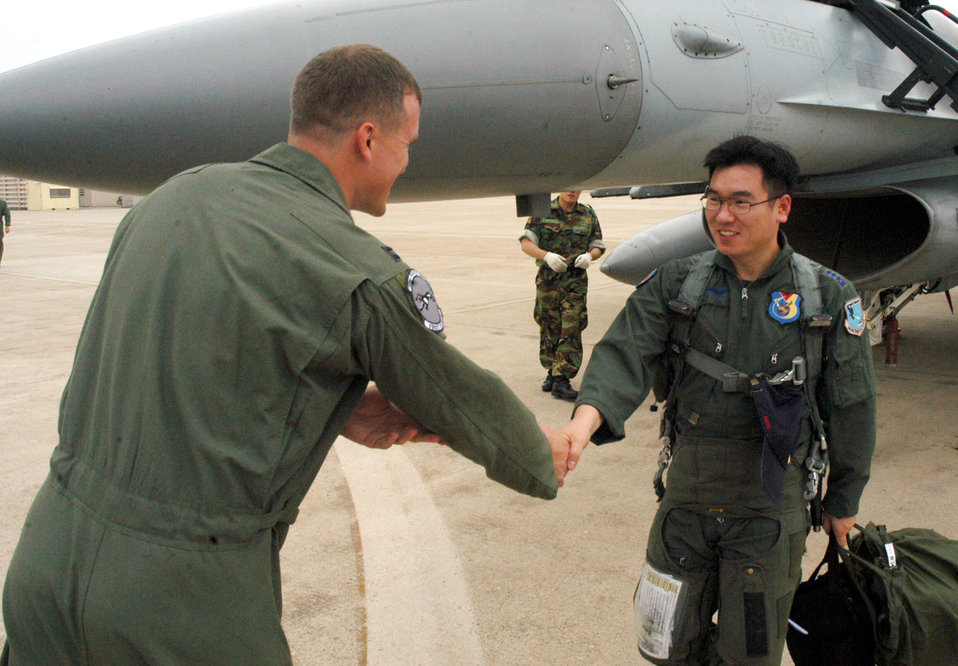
Buddy Wing Program improves communication at Kunsan

Capt. Scott Johnson greets South Korean air force Capt. Yeon, Sang Mo during the 35th Fighter Squadron's quarterly Buddy Wing Program June 27 at Kunsan Air Base, South Korea. The exchange program allows American and South Korean pilots to learn about each other's flying operations to better operate in the event of hostilities on the peninsula. Captain Johnson is a pilot with the 35th FS.